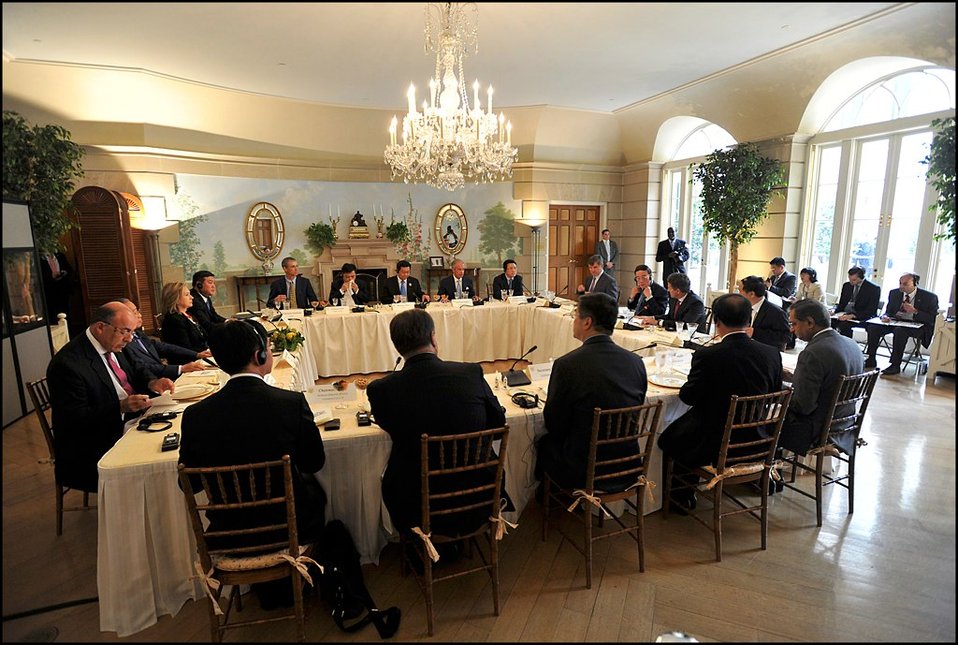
U.S.-China Strategic and Economic Dialogue

On Tuesday, the strategic and economic tracks of the U.S.-China Strategic and Economic Dialogue came together for a roundtable lunch with U.S. and Chinese business leaders.